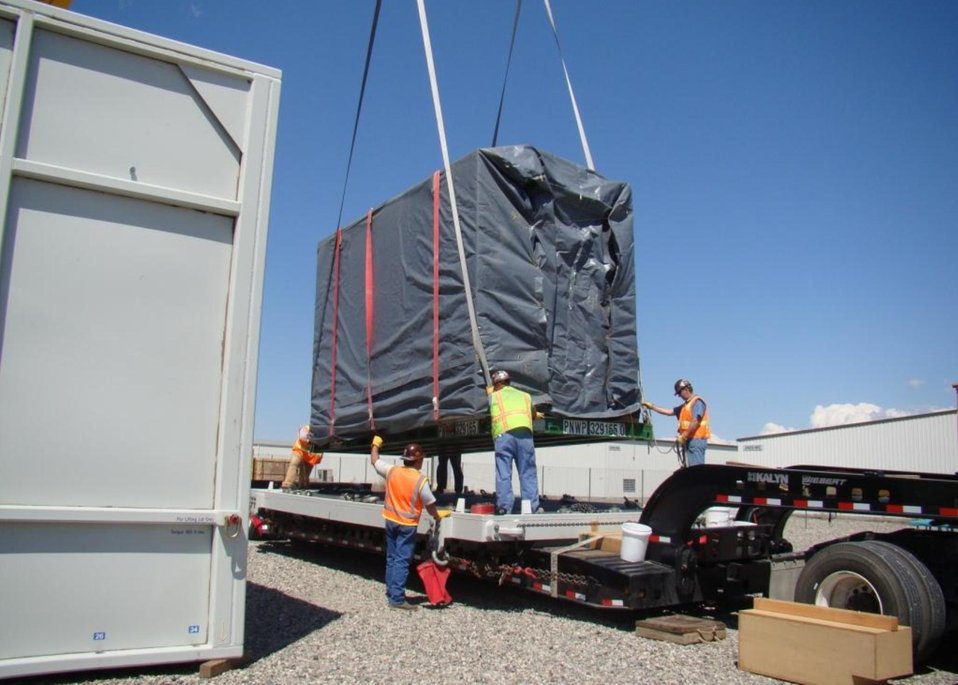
Hanford mixed low-level waste shipment prep

Preparing low-level waste for shipment at Hanford.